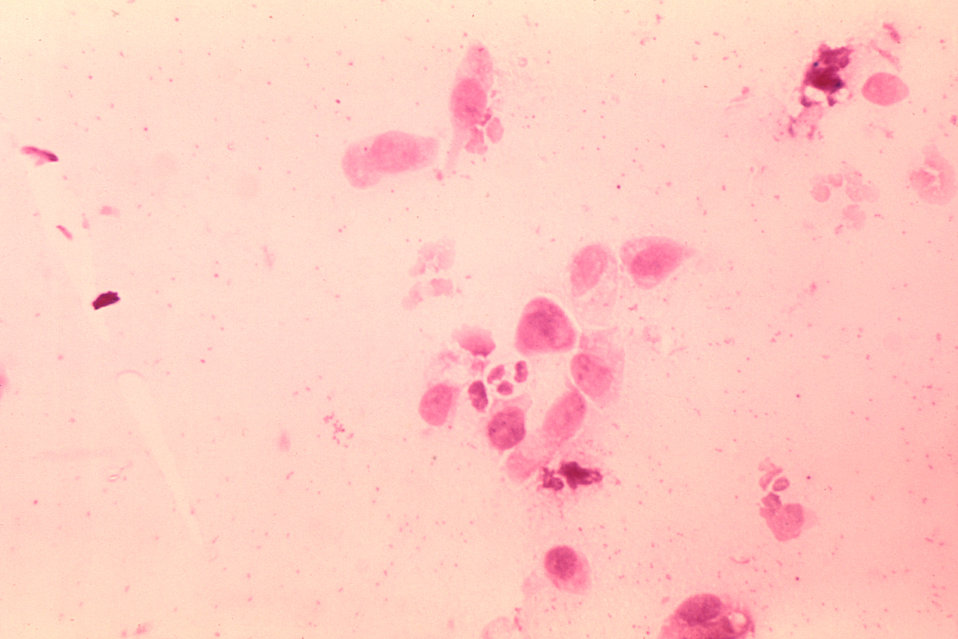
This decolorized Gram-stained micrograph revealed the presence of numerous Gram-negative staphylococcal bacteria.